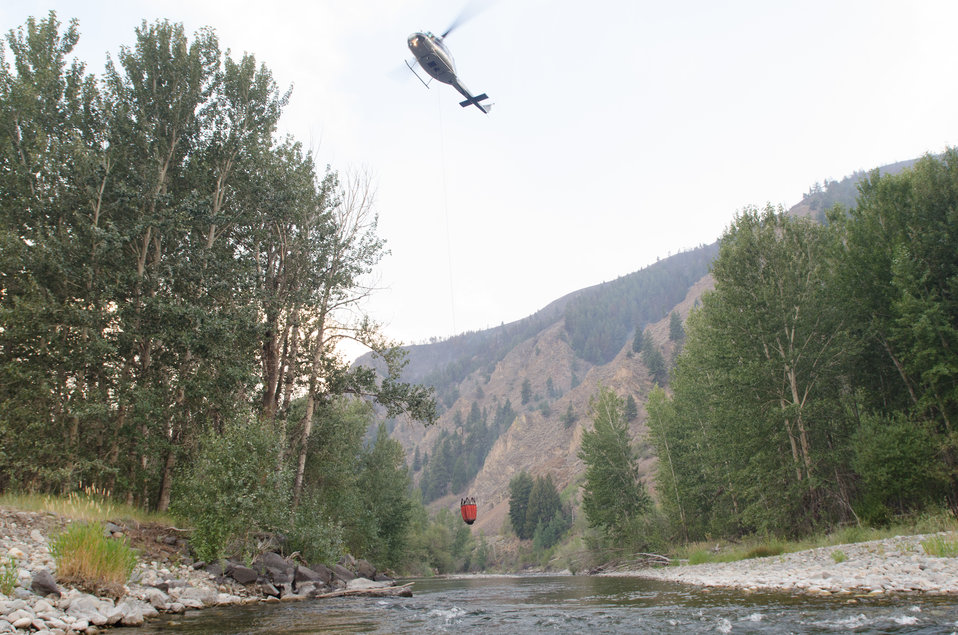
A Bell UH-1H helicopter descends with an empty flexible bucket to refill with water from the Wood River, for a water drop on the Carbonate Ridge high above and next to the river, during Beaver Creek Complex Wildlands Fire, West of Hailey, ID, on Monday, Aug 19, 2013.